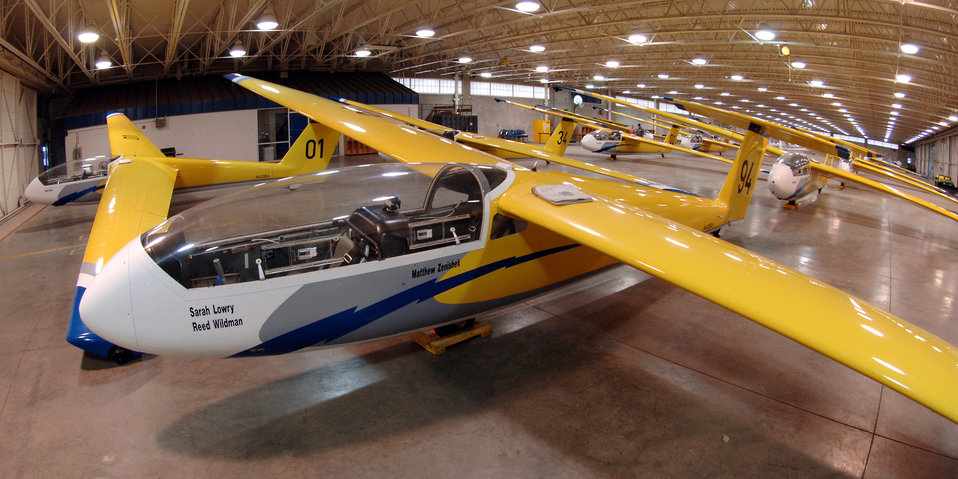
Gliders help future Air Force leaders soar

TG-10B gliders are sheltered in a hangar on the flightline at the U.S. Air Force Academy, Colo. The TG-10B (L-23 Super Blanik), a conventional, two-place tandem, basic training sailplane, is used to introduce Air Force cadets to flight through the Soar-For-All program. Maneuvers flown in the TG-10B include aerotow, stall recoveries, slow flight, steep turns and rectangular traffic patterns.